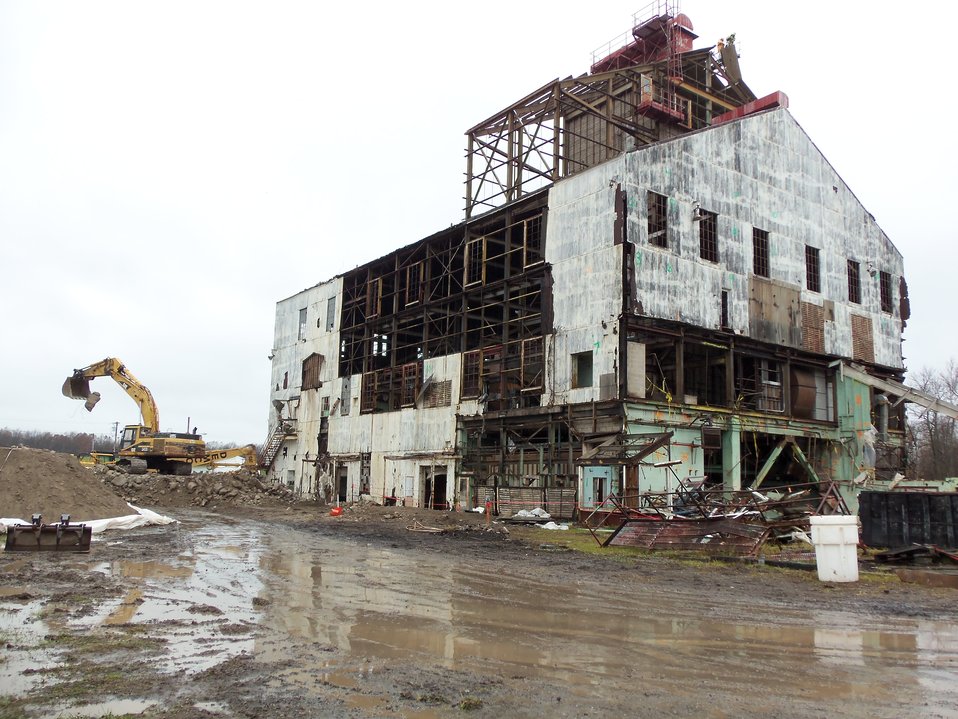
Deconstruction siding half removed.
Activities from the Niagara Falls Storage Site, which is associated with the former Lake Ontario Ordnance Works. Formerly Utilized Sites Remedial Action Program (FUSRAP), a program initiated in 1974 to identify, investigate and clean up or control sites that were part of the Nation's early atomic energy and weapons program. Activities at the sites that are eligible for FUSRAP were conducted by Manhattan Engineer District (MED) or the Atomic Energy Commission (AEC), both predecessors of the Department of Energy (DOE). The U.S. Army Corps of Engineers was assigned management of FUSRAP by Congress in 1997.